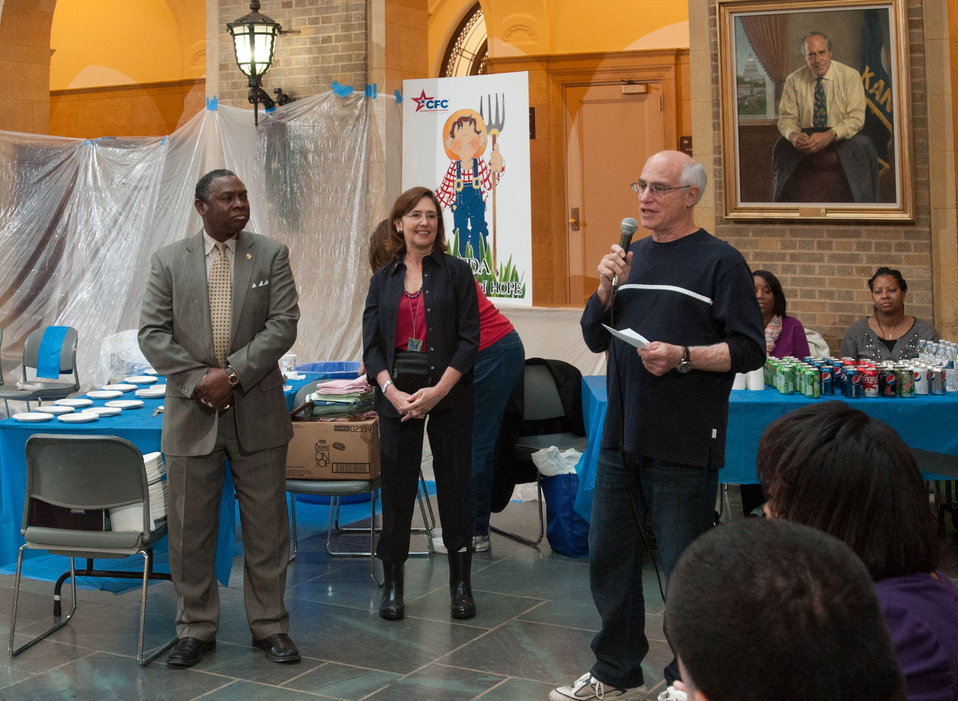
Natural Resources and Environment Under Secretary Harris Sherman opened the Combined Federal Campaign (CFC) fundraiser event at the U.S. Department of Agriculture (USDA) headquarters, on Monday Dec. 3, 2012, in Washington, D.C. The event featured a 'Pie Smash” event where attendees, on personal time, donate money to throw non-dairy whipped 'cream' pies at Agriculture leadership. Other fund raising activities at this event included a silent auction, candy packets, bake sale, and pulled-pork sandwich lunches for donations. Additionally, information tables for Red Cross and Canine Partners for Life provided people with answers about the organizations and how to participate.